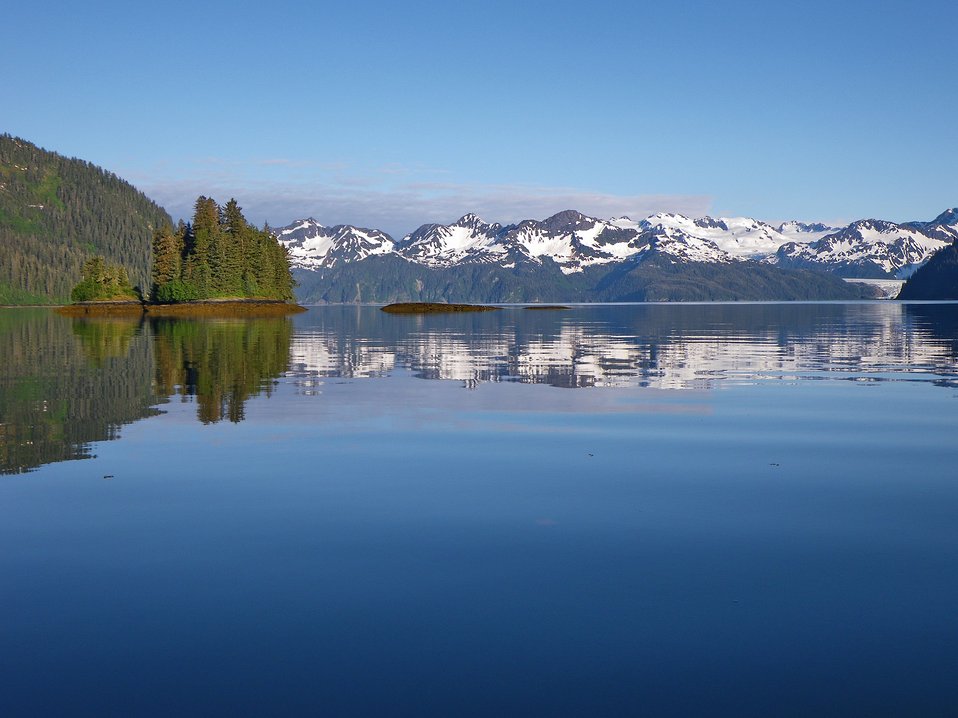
Shimmering reflections off Hogg Bay